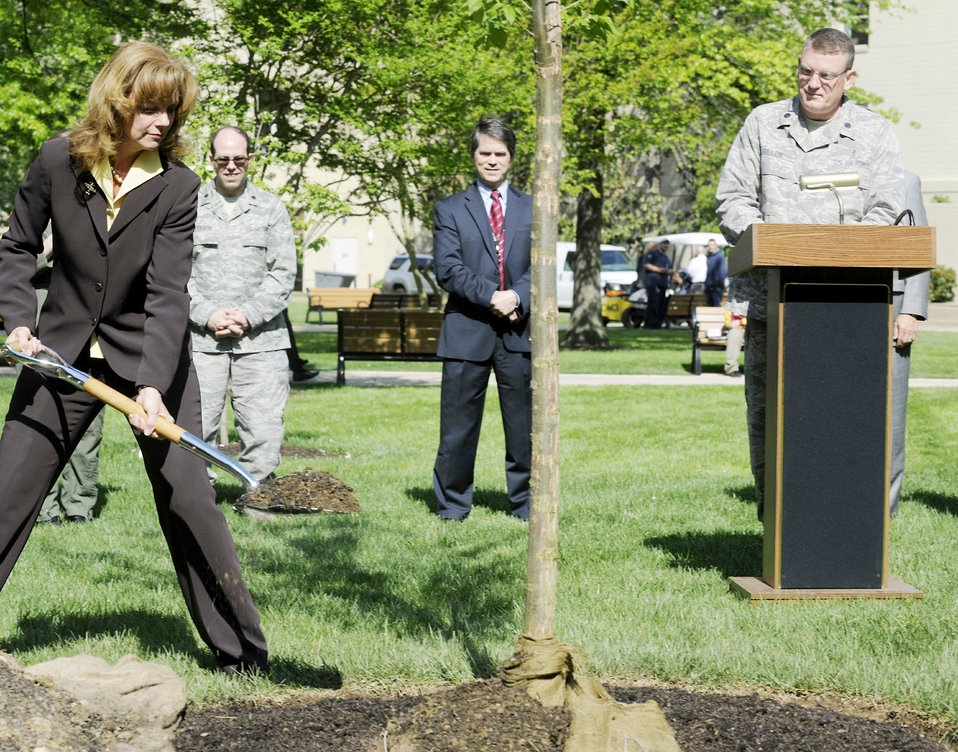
Pentagon officials join Air Force bases for '40 trees in 40 communities' tree planting

(Left) Debra Tune shovels soil during